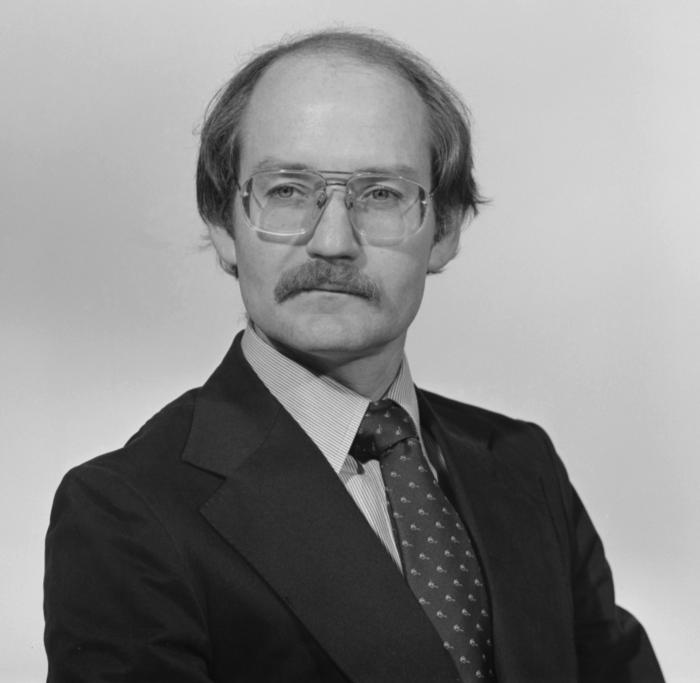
This photograph depicts former Centers for Disease Control microbiologist, and Deputy Director of the National Center for Infectious Diseases, Dr, Joseph E. McDade.